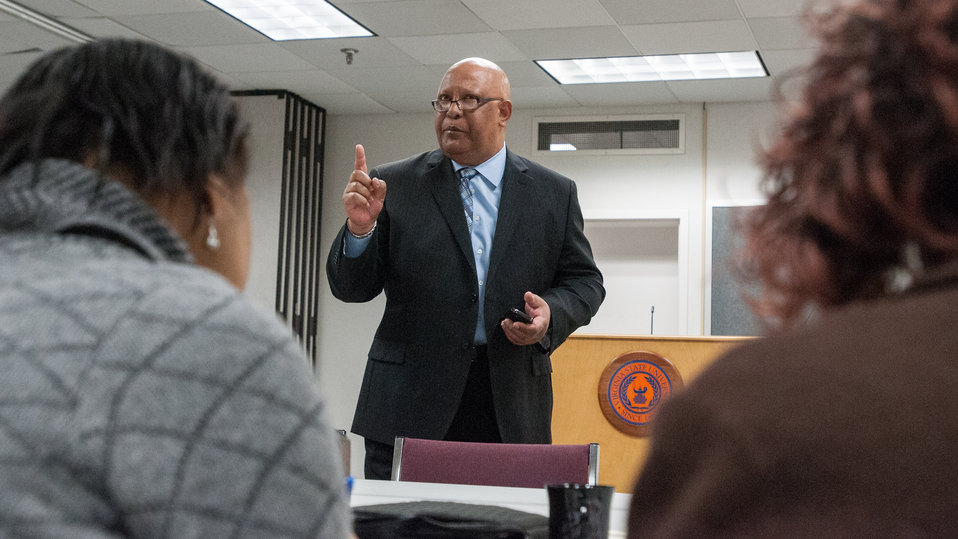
Fort Valley State University Southern Region SARE Program1890 Land Grant Liaison James H. Hill took farmers through the ins-and-outs of 'How to write a Winning Proposal & Identify Potential Grant Sources for Producers” during the “Virginia State University (VSU), USDA and Virginia Farmers Working Together” outreach workshop in the VSU, L. Douglas Wilder building on Thursday, March 7, 2013, in Petersburg, VA. Farmers shared and learned new ways to do more with USDA services, and how to apply for programs that will help grow their business.